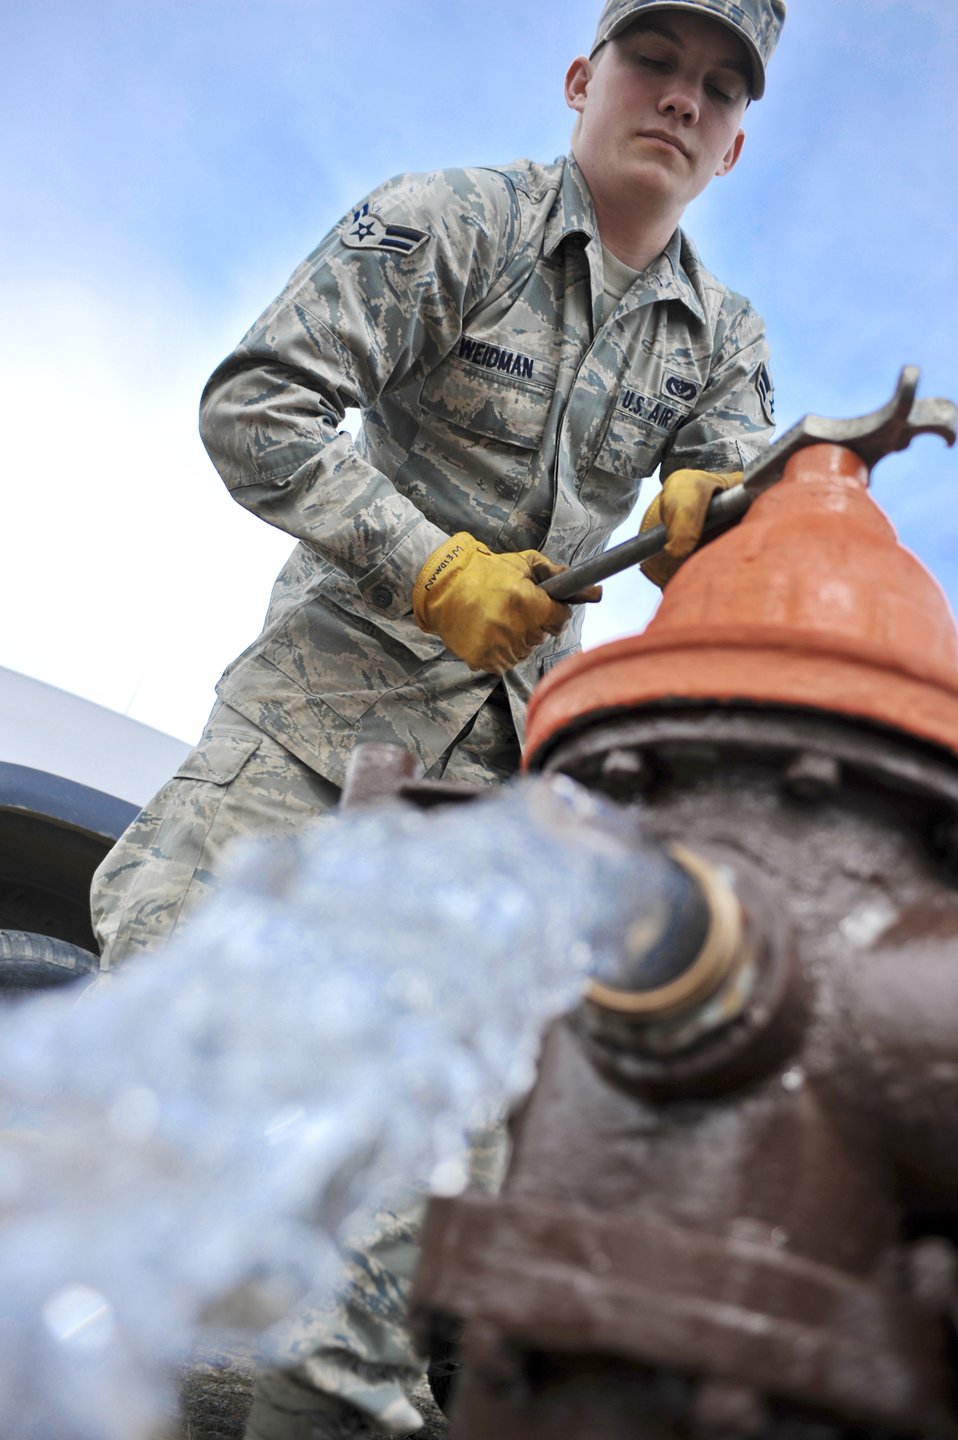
Control the flow

Airman 1st Class Joseph Weidman releases water from a fire hydrant at Elmendorf Air Force Base, Alaska, April 29, 2010. The fluoride levels in the water at Elmendorf are elevated and by releasing some of the water, it decreases this level. Airman Weidman is assigned to the 3rd Civil Engineer Squadron.